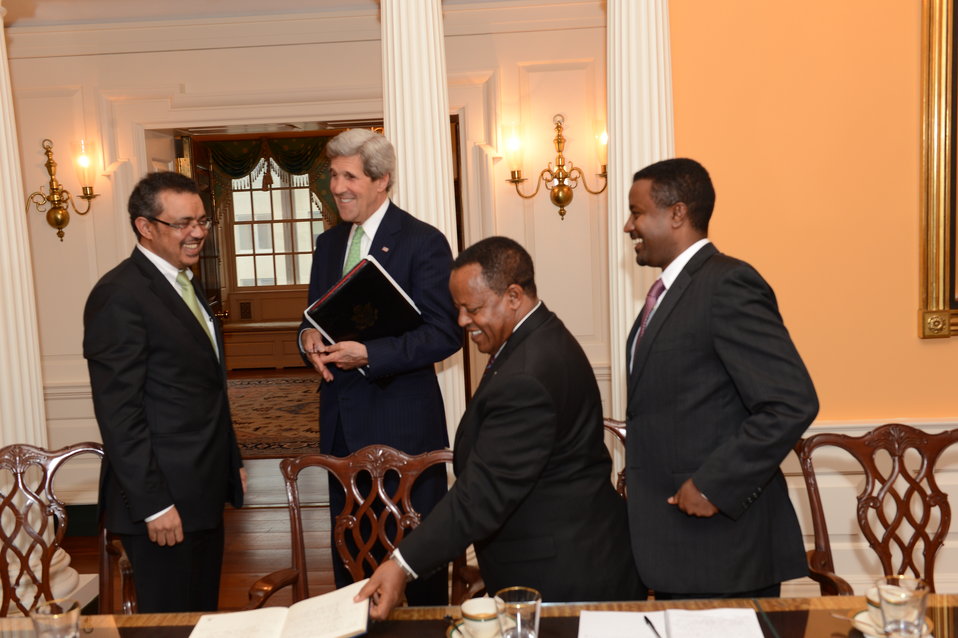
Secretary Kerry Meets With Ethiopian Foreign Minister Adhanom

U.S. Secretary of State John Kerry meets with Ethiopian Foreign Minister Tedros Adhanom at the U.S. Department of State in Washington, D.C., on April 30, 2013.